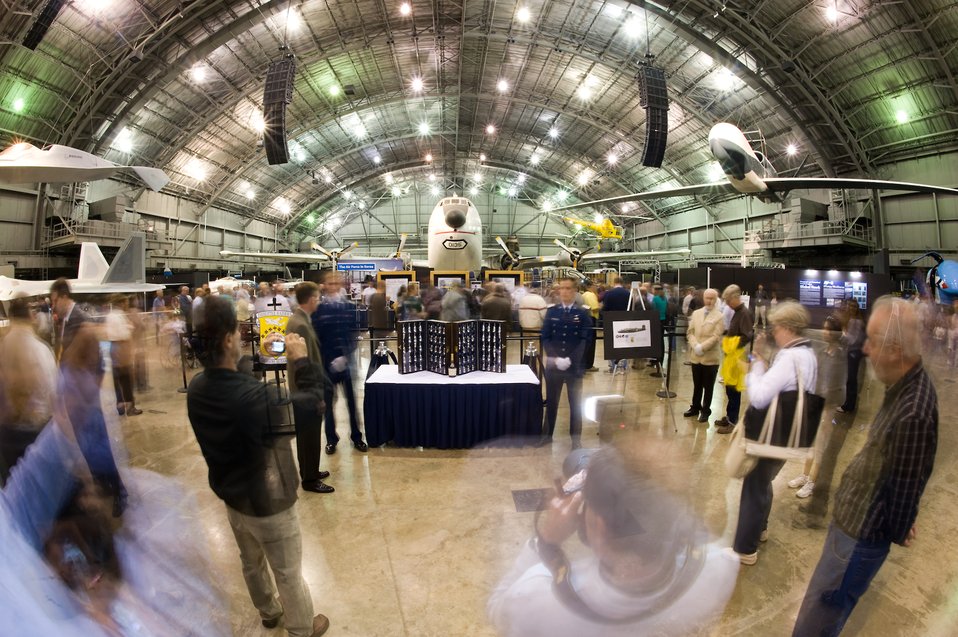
68th Reunion of Doolittle Raiders

Doolittle Raider Goblets on display at the National Museum of the U.S. Air Force at Wright-Patterson Air Force Base, Ohio on April 18, 2010. Air Force Academy cadets were on hand to answer questions about the goblets. Behind the display, Doolittle Raiders signed autographs and met with thousands of visitos during the three-day event.